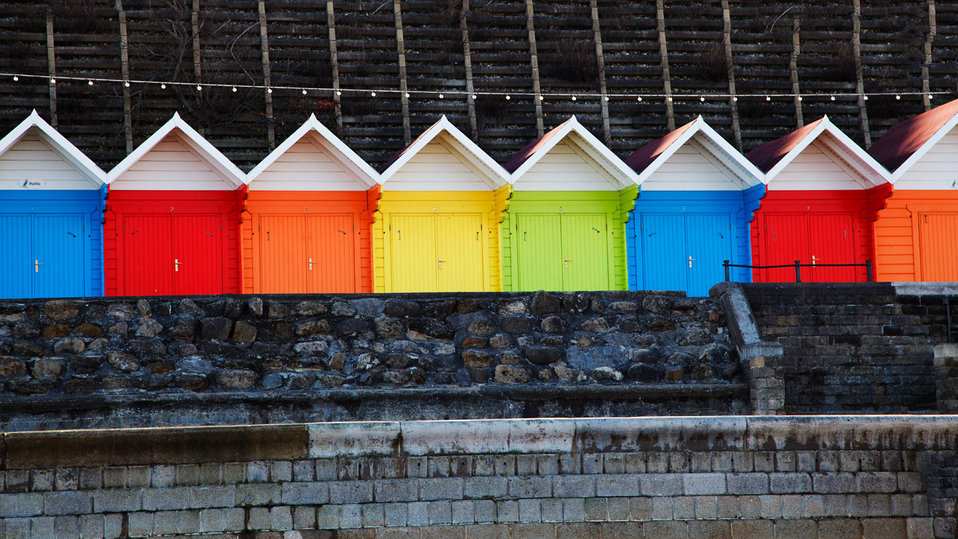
Multi colored huts

Several colorful beach huts.